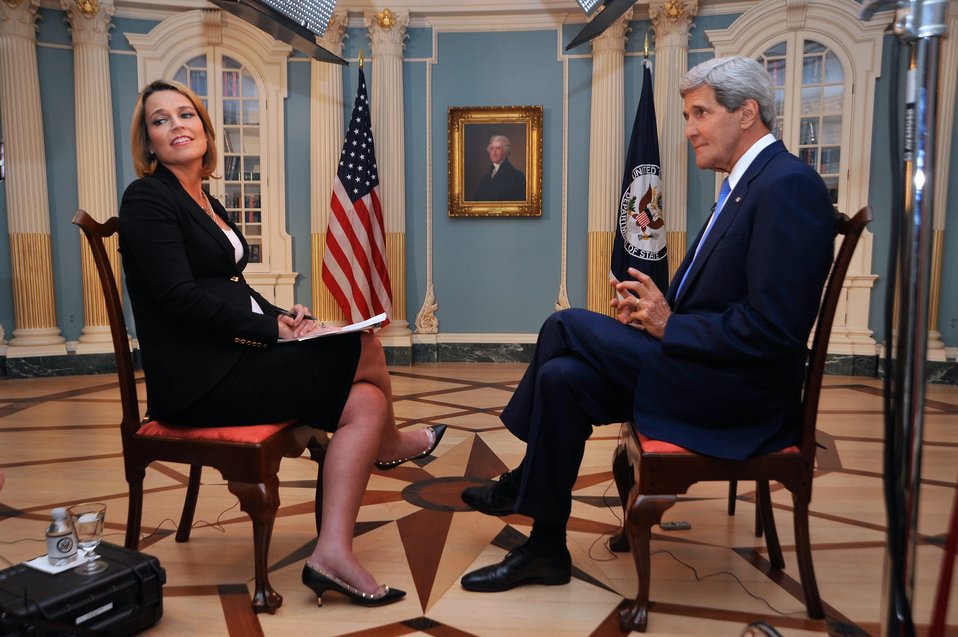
Secretary Kerry Prepares For Interview With 'Today's' Guthrie

NBC News 'Today' show co-anchor Savannah Guthrie checks with her crew before beginning a second segment of an interview with U.S. Secretary of State John Kerry in the Treaty Room at the State Department on June 18, 2014.